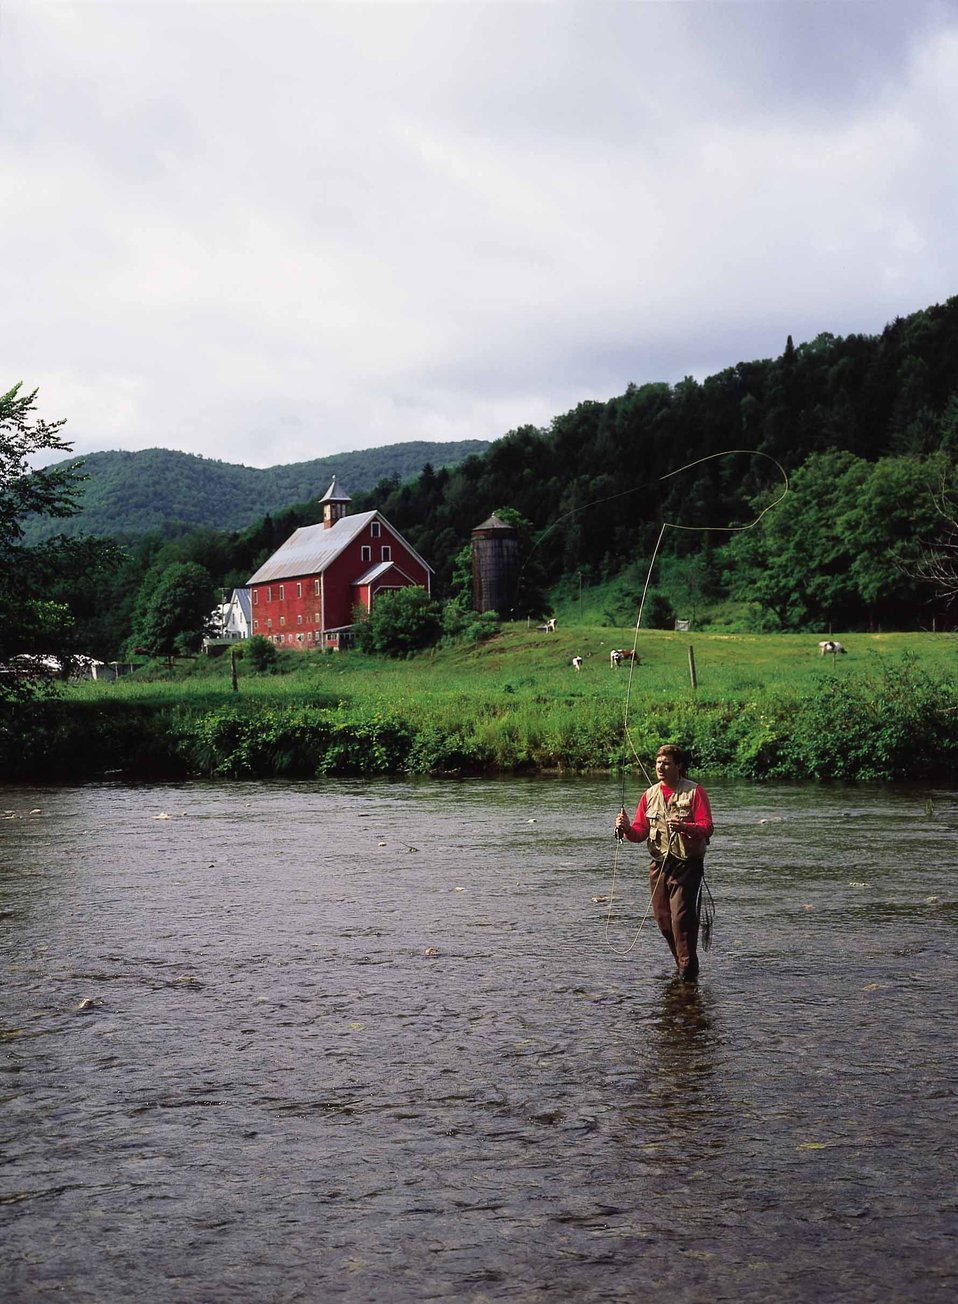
Fishing in a coldwater stream in Vermont.